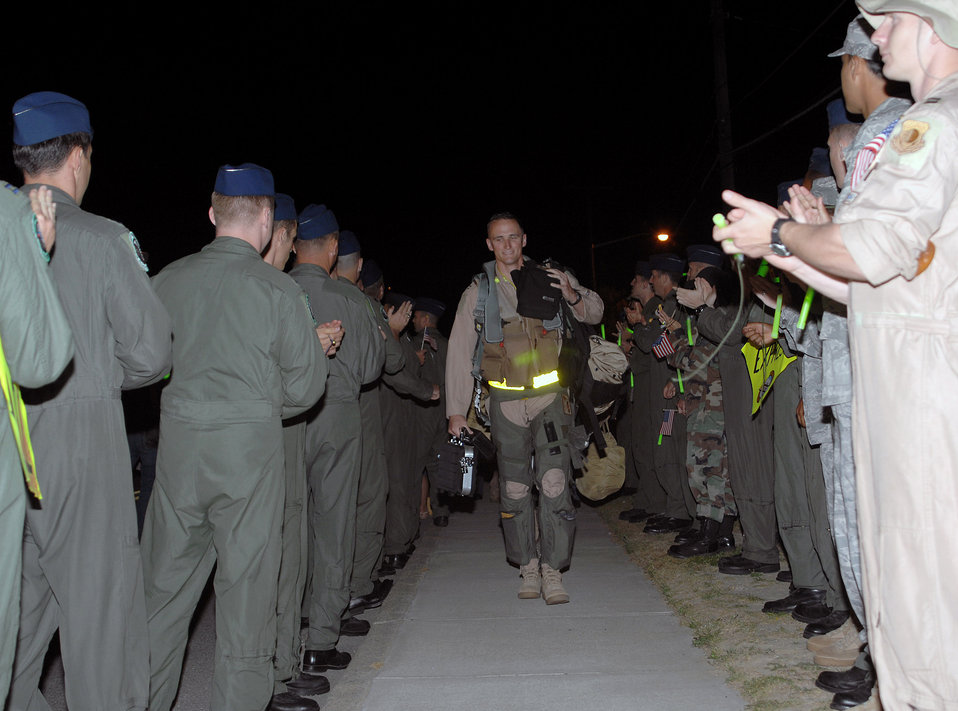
Airmen mobilize to confront Afghan insurgency

Capt. David Gunter, 336th Fighter Squadron aircrew, strides through a gauntlet of well wishers before stepping to an awaiting F-15E Strike Eagle at Seymour Johnson Air Force Base, N.C., April 29. More than a dozen fighter aircraft were sent to Afghanistan provide air support to coalition ground forces.